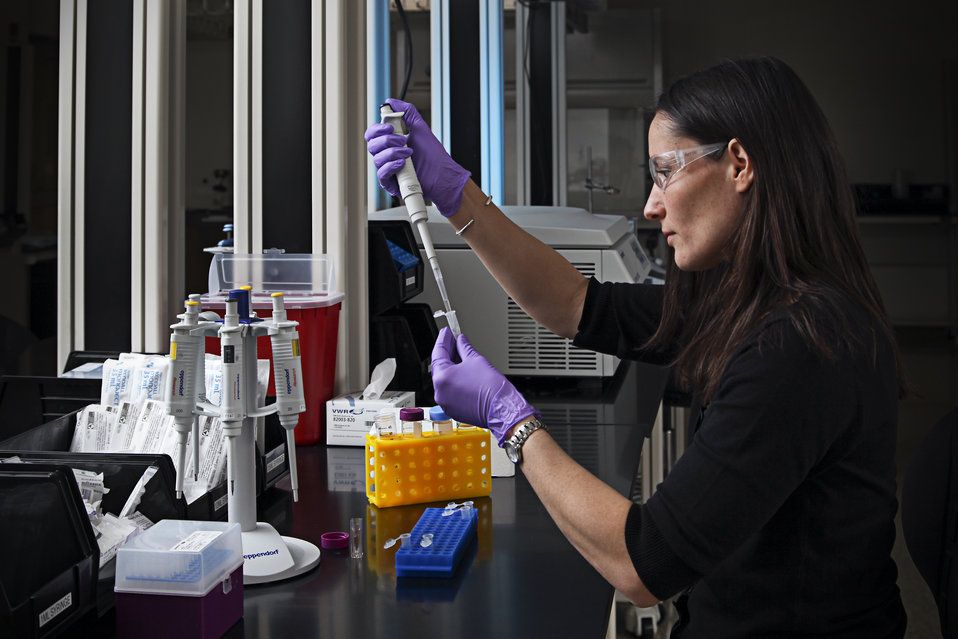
Scientist prepares protein solutions for structional investigation with neutrons at Oak Ridge National Laboratory's Spallation Neutron Source. .

The Spallation Neutron Source (SNS) is an accelerator based neutron source in Oak Ridge, Tennessee. The SNS provides the most intends pulsed power neutron beams in the world for scientific research and industrial development.